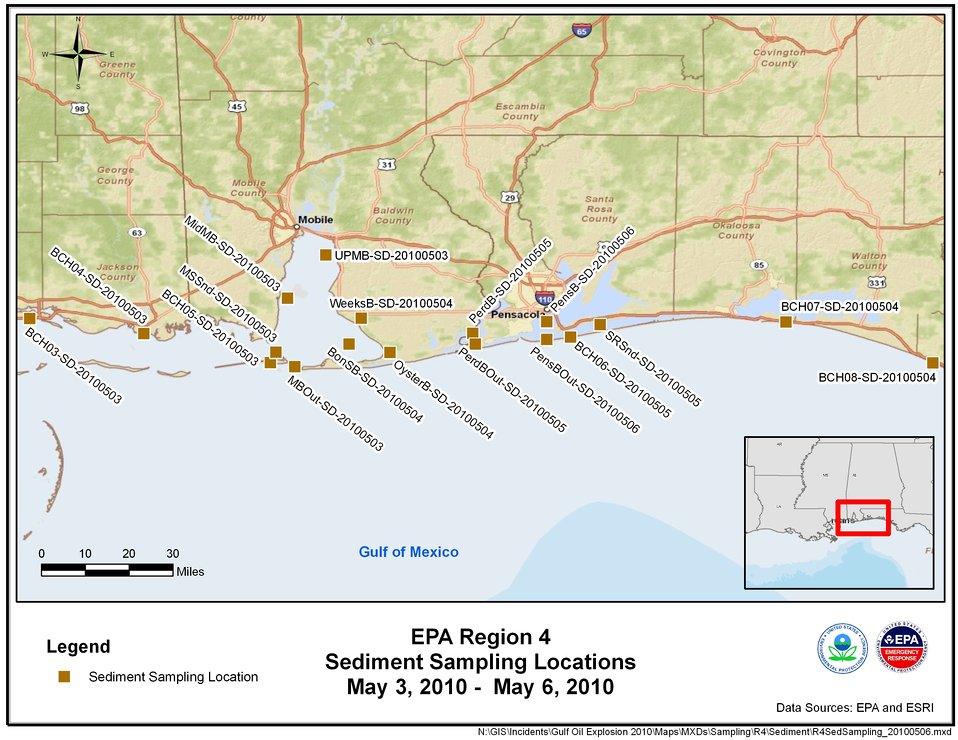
EPA Sediment Sampling Locations May 3-6, 2010